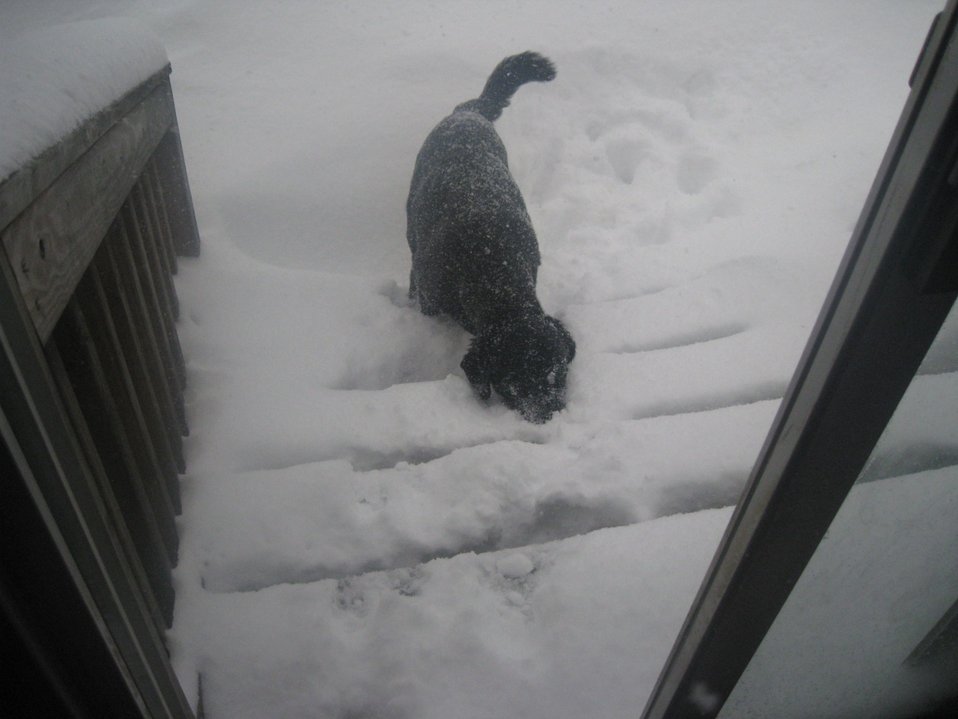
Dog making his way back up the steps to warmth inside during blizzard of February 9-10 2010. The snowstorms of the winter of 2009-2010 were hard on pets as snow covered up their familiar areas for weeks at a time.